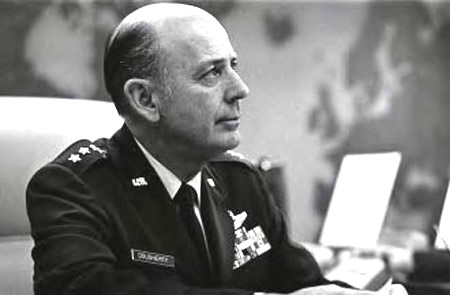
Former SAC commander General Dougherty dies

Retired Gen. Russell E. Dougherty died Sept. 7 at his home in Potomac Falls, Va. His last assignment was commander in chief of Strategic Air Command.